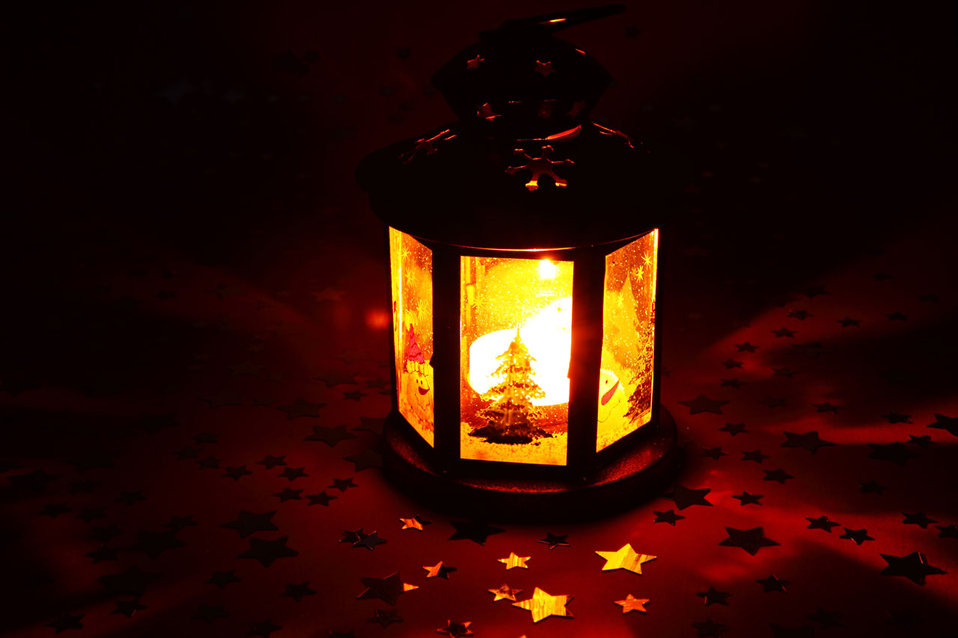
Christmas lamp

Christmas lantern glowing in dark - landscape.